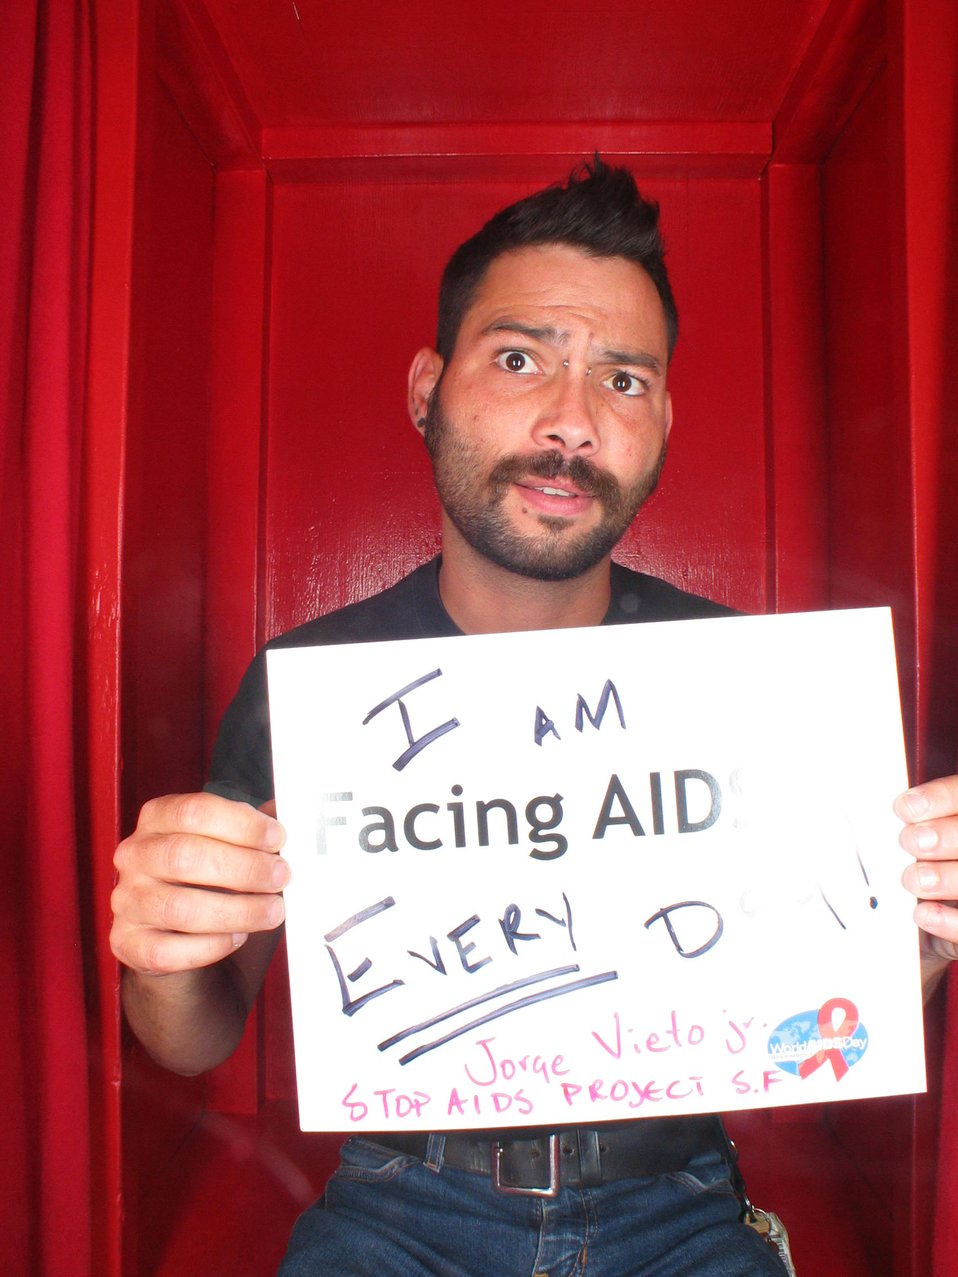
I am Facing AIDS every day